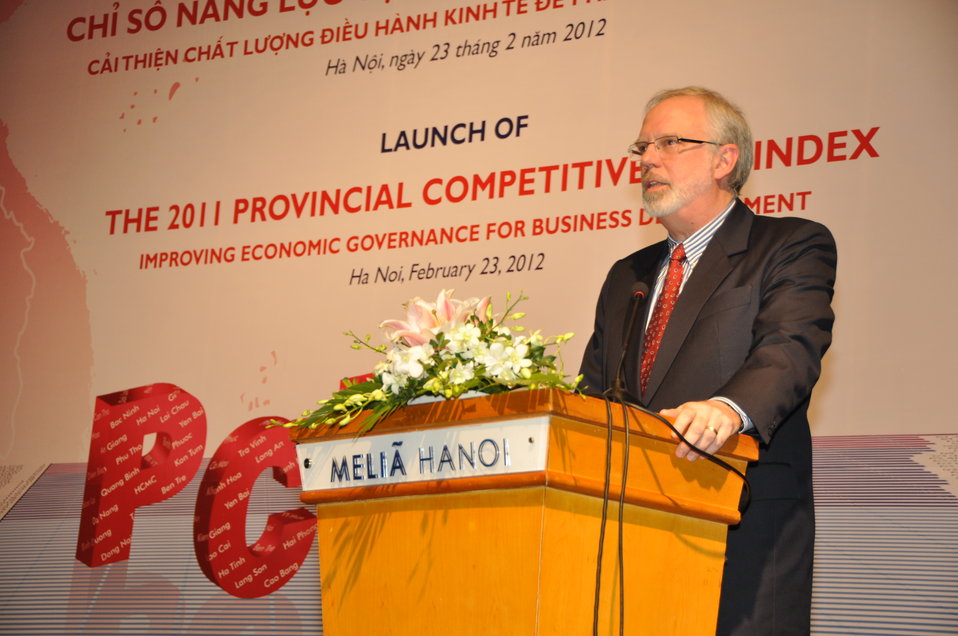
U.S. Ambassador David B. Shear at the Provincial Competitiveness Index 2011 Launch